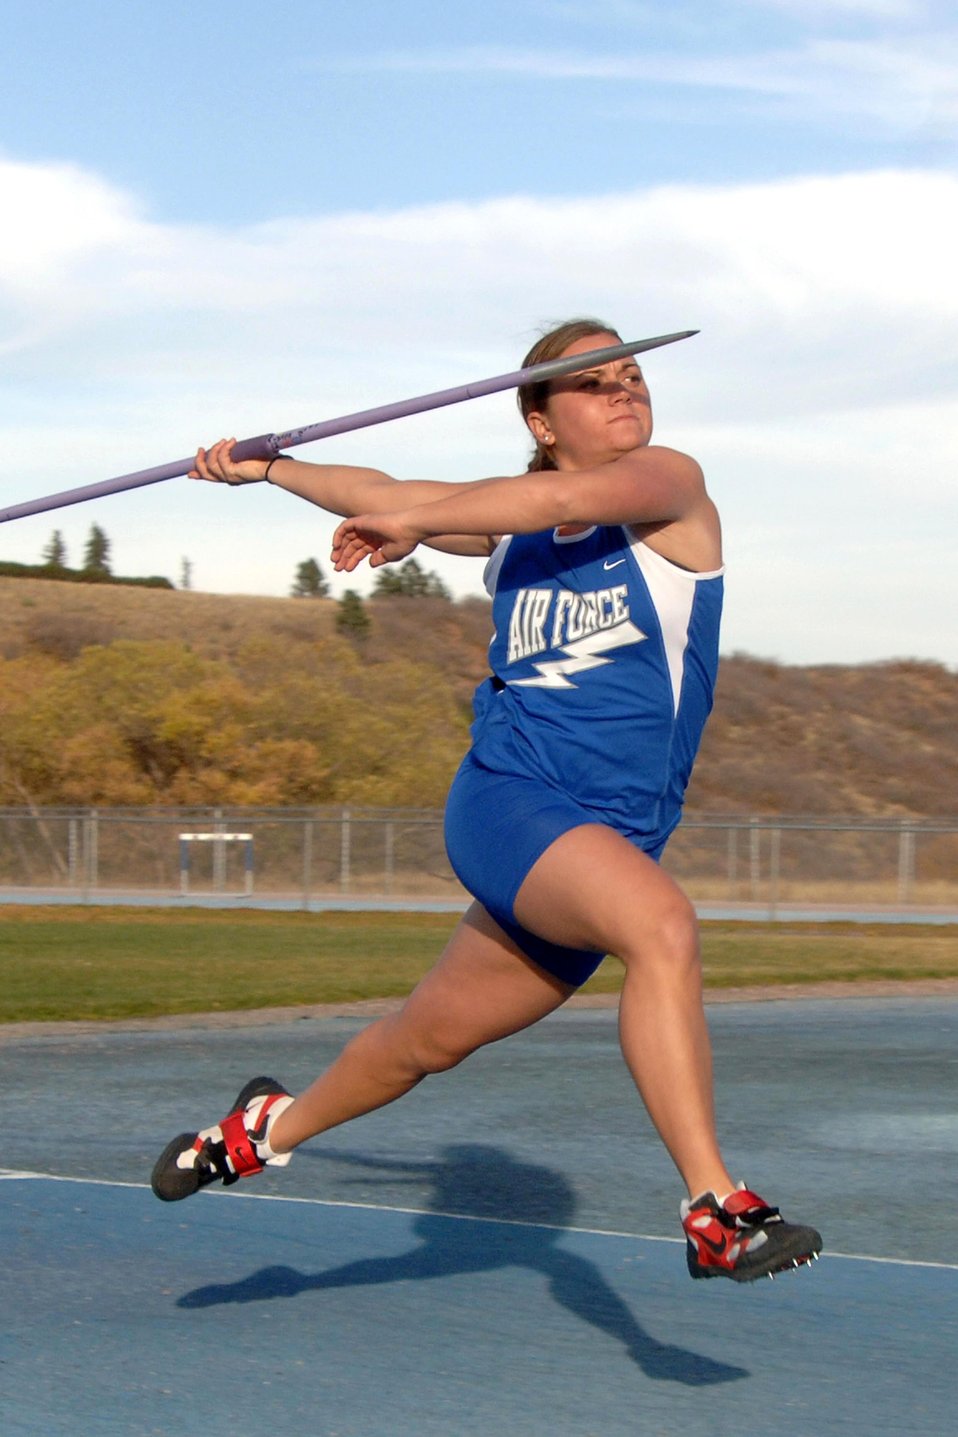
Air Force athlete earns silver medal at Olympic Trials

U.S. Air Force Academy record-holder Dana Pounds placed second in the javelin throw in the finals of the 2008 U.S. Olympic Trials June 30 at Hayward Field in Eugene, Ore.